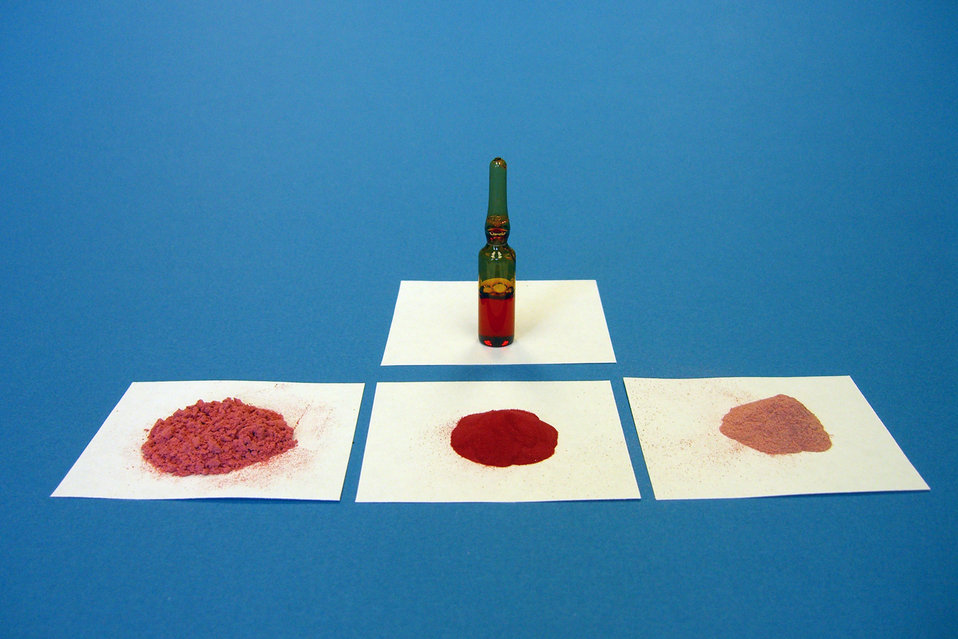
Cranberry SRMs

Previously, measurements of organic acid ratios in berries, fruit juices and dietary supplements had relied on references that do not take into account the complexity of the whole berry. NISTs new matrix-matched certified references correct this problem. From top to bottom and left to right: SRM 3282 Low-Calorie Cranberry Juice Cocktail, SRM 3281 Cranberry (Fruit), SRM 3283 Cranberry Extract, and SRM 3284 Cranberry-Containing Solid Oral Dosage Form.